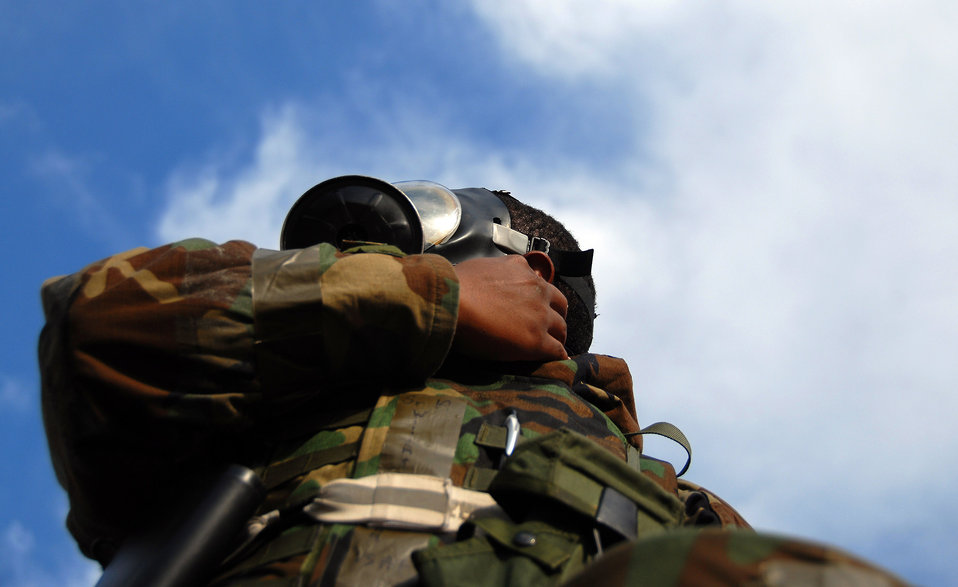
'All clear'

Senior Airman Michael Williams-Cottman takes off his gas mask Nov. 6 after a simulated attack on Osan Air Base, South Korea. The exercise tested the ability to defend the base and conduct daily operations in a combat environment. The Airman is assigned to the 51st Communications Squadron.